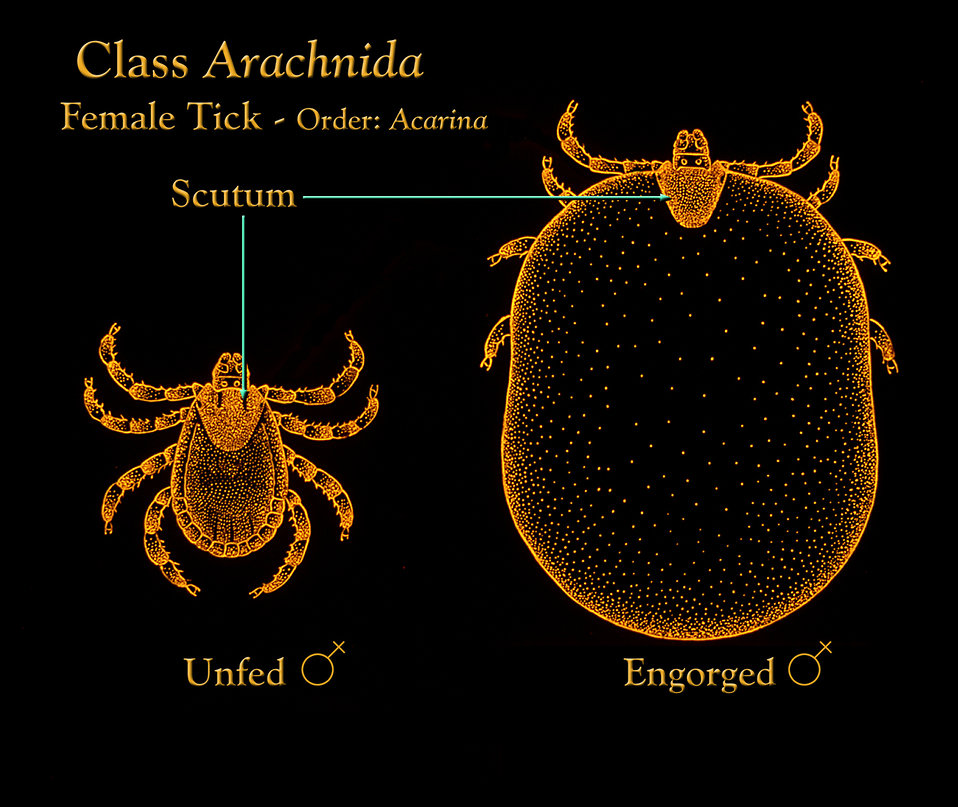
This illustration depicts the appearance of an unfed female Ixodidae hard tick compared to an engorged female.